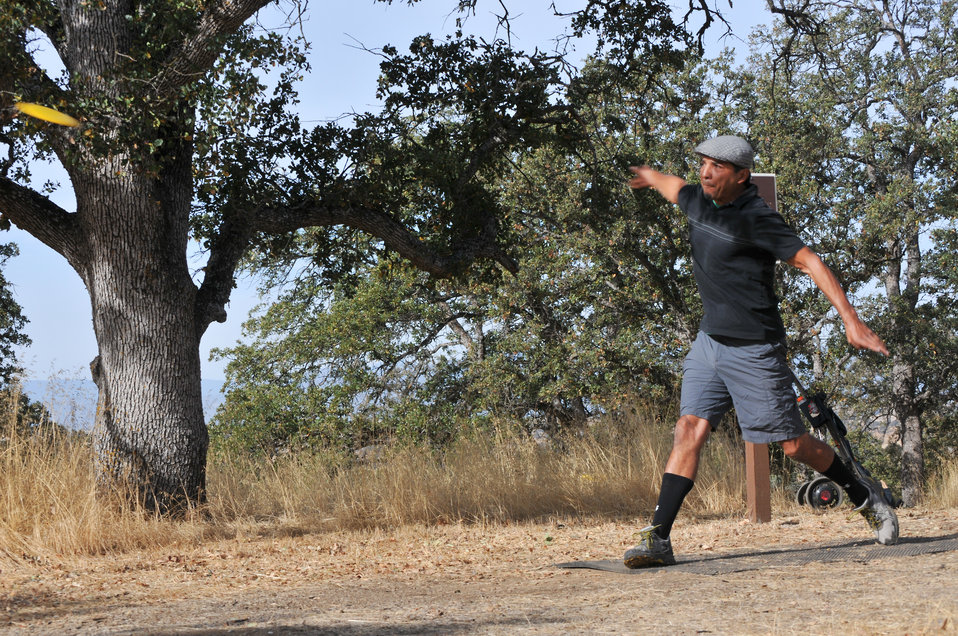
BLACK BUTTE LAKE, Calif. (Oct. 18, 2010) -- A disc golfer tees off during the Professional Disc Golf Association's Norcal Series Championships here Oct. 16. The U.S. Army Corps of Engineers Sacramento District’s Black Butte hosted the tournament Oct. 15-17 at its new disc golf course, built on park lands by The Orland Aces disc golf club under a partnership with the Corps. More than 150 disc golfers from as far as Texas competed in the tournament.